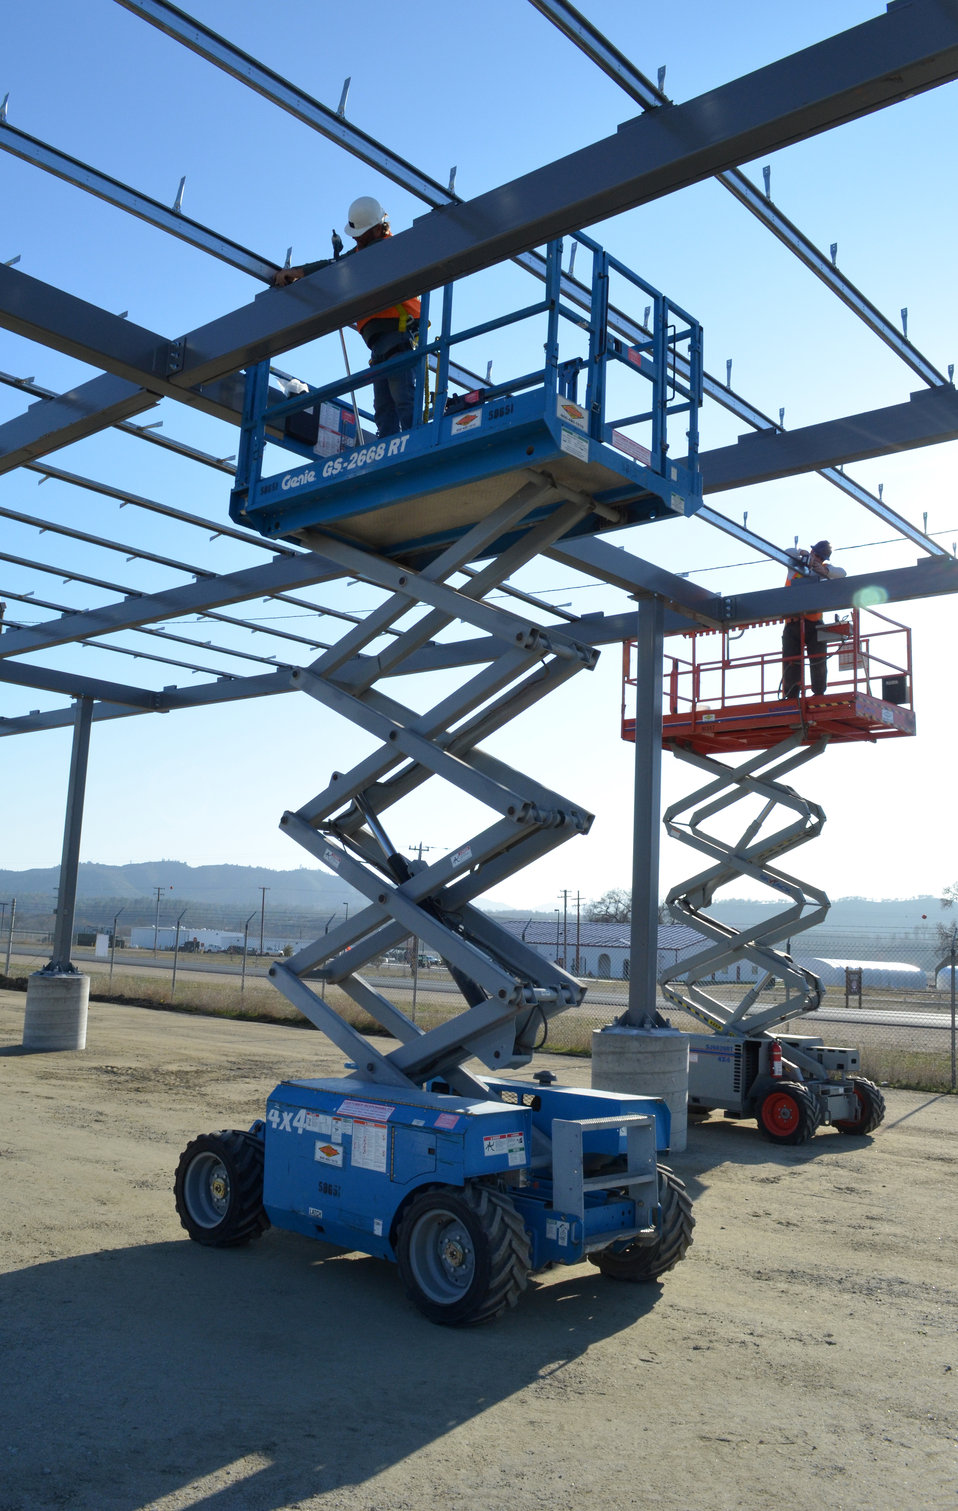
Solar project at Fort Hunter Liggett

Construction workers build the frame for a one-megawatt solar microgrid project at Fort Hunter Liggett, Calif., Dec. 22, 2011. The frame will support photovoltaic panels, said Bob Roy, a project manager with the U.S. Army Corps of Engineers Sacramento District, which is overseeing the project. The grid, scheduled for completion in April 2012, is expected to be the first of four at the post. Once complete, the grid will generate enough energy to power 250 to 300 homes. Along with the energy production, the panel arrays will form a canopy that will shade the majority of the post’s vehicles.